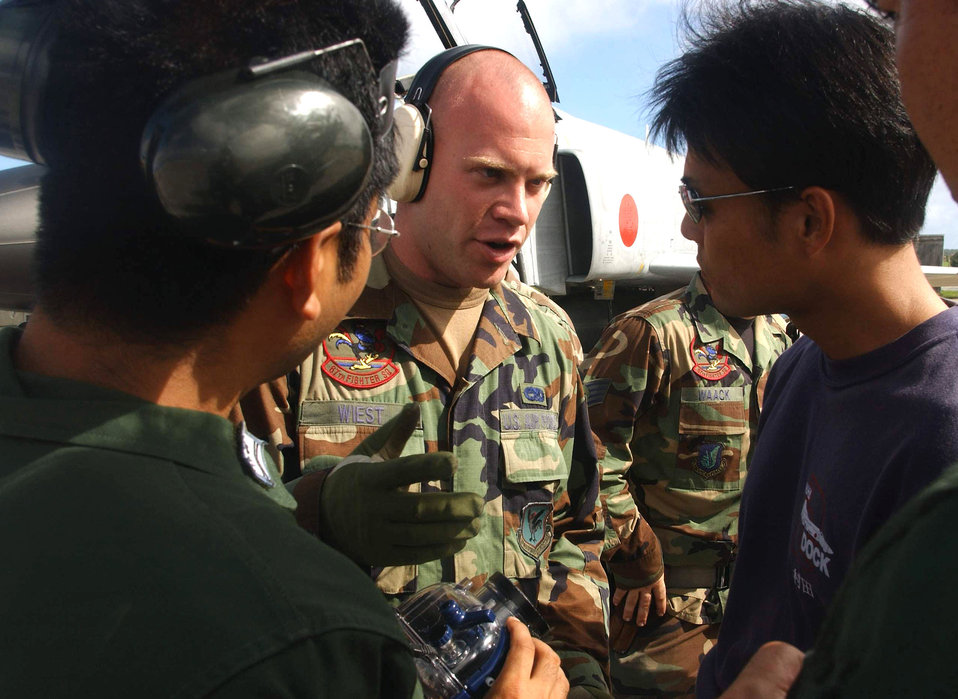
Exercise Cope North

ANDERSEN AIR FORCE BASE, Guam -- Staff Sgt. Michael Wiest conducts familiarization training here with Japanese F-4 crew chiefs from the 83rd Wing at Naha Air Base, Japan, during exercise Cope North. Wiest is a crew chief from the 67th Aircraft Maintenance Unit at Kadena Air Base, Japan.